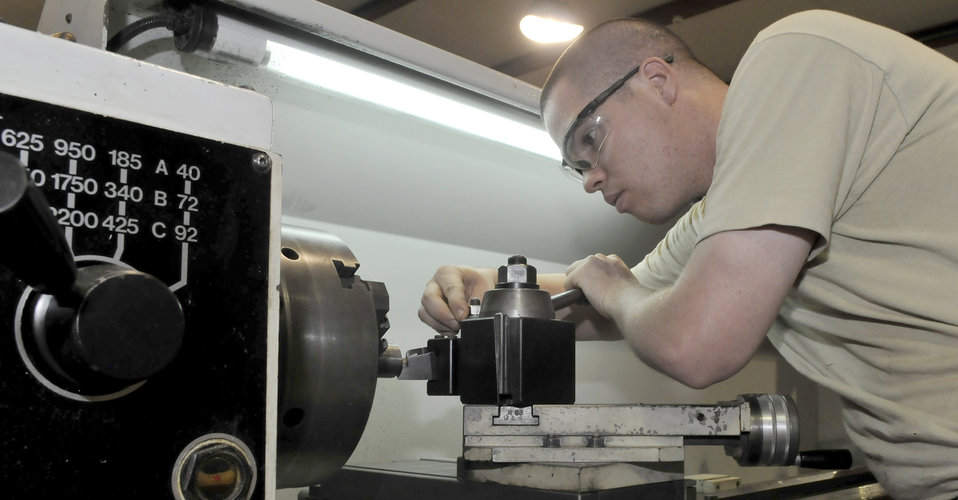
Metals technology

Staff Sgt. Bradley White aligns a cutting die on a metal lathe before turning replacement alignment pins for an emergency aircraft landing gear arrest system July 21, 2010, at Joint Base Balad, Iraq. Sergeant White is a 332nd Maintenance Squadron metals technology craftsman